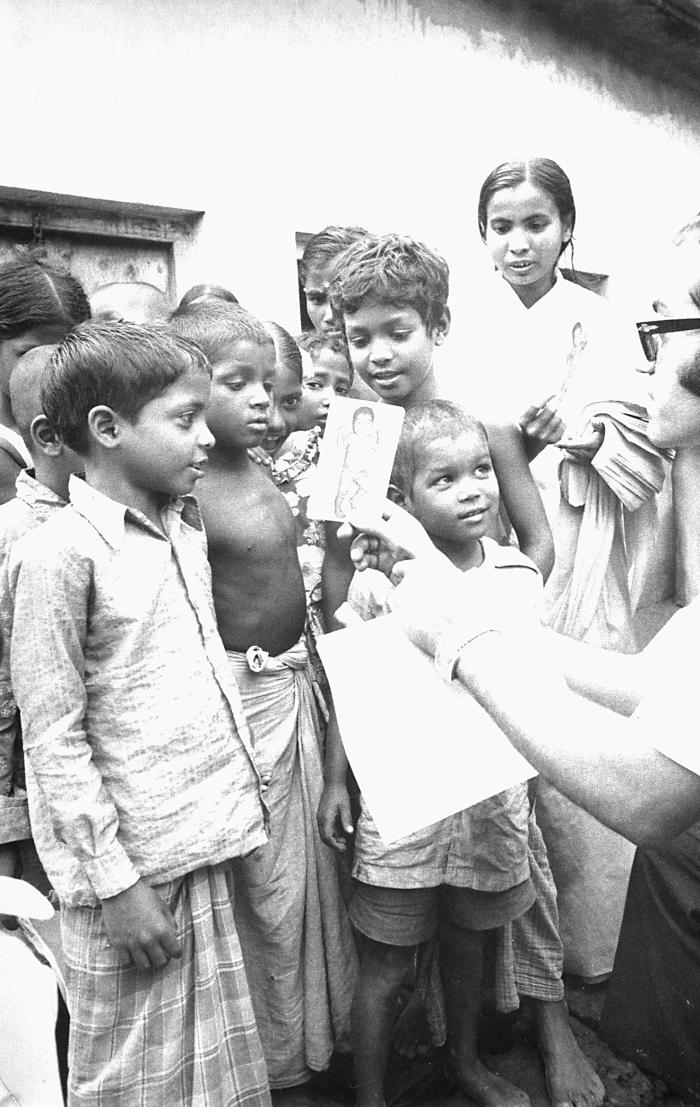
This photograph depicted World Health Organization (WHO) epidemiologist Dr. Ali Mourad, as he was showing a group of Bangladesh village children the standard photograph that depicted a child displaying the characteristic maculopapular smallpox rash.It was deemed quite important to discuss the disease with the community children. In fact, the last known occurring case of the illness, i.e., variola major, involving a young girl named Rahima Banu, was reported by an 8 year old girl, whose name was Bilkisunnessa.